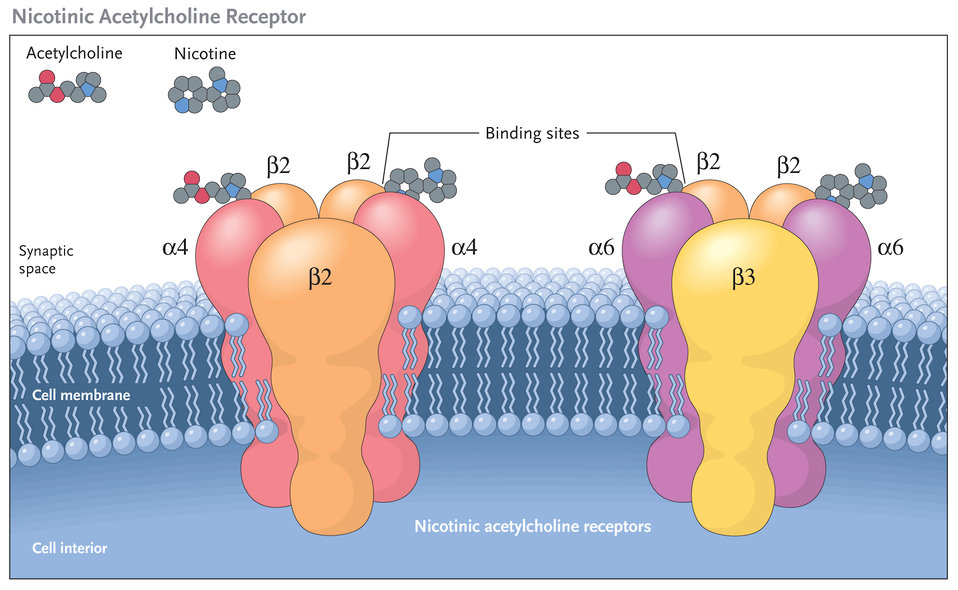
nicotinic acetylcholine receptor